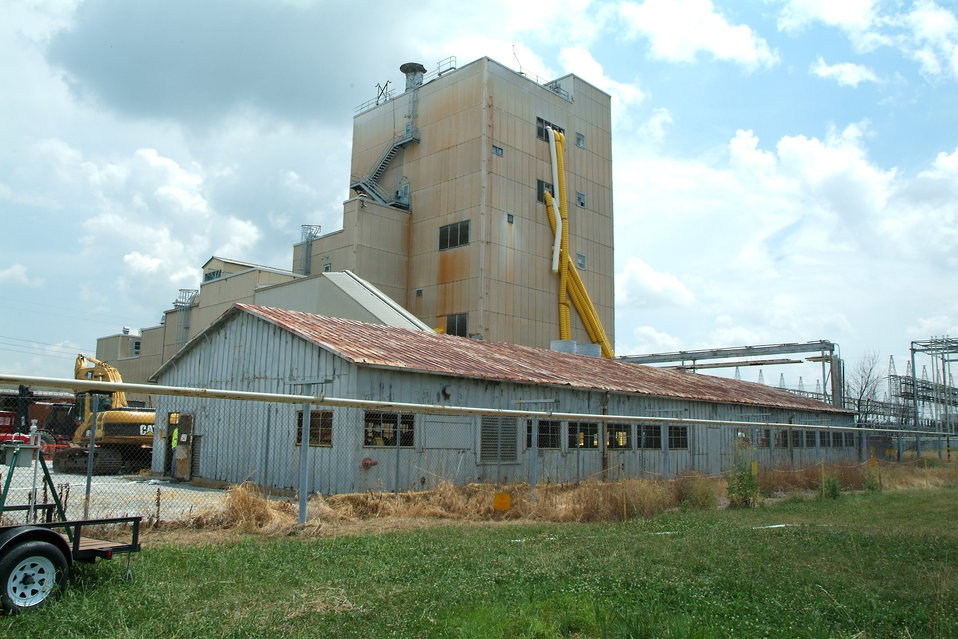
Magnesium storage before demolition

Recovery Act work conducted at the Paducah site.